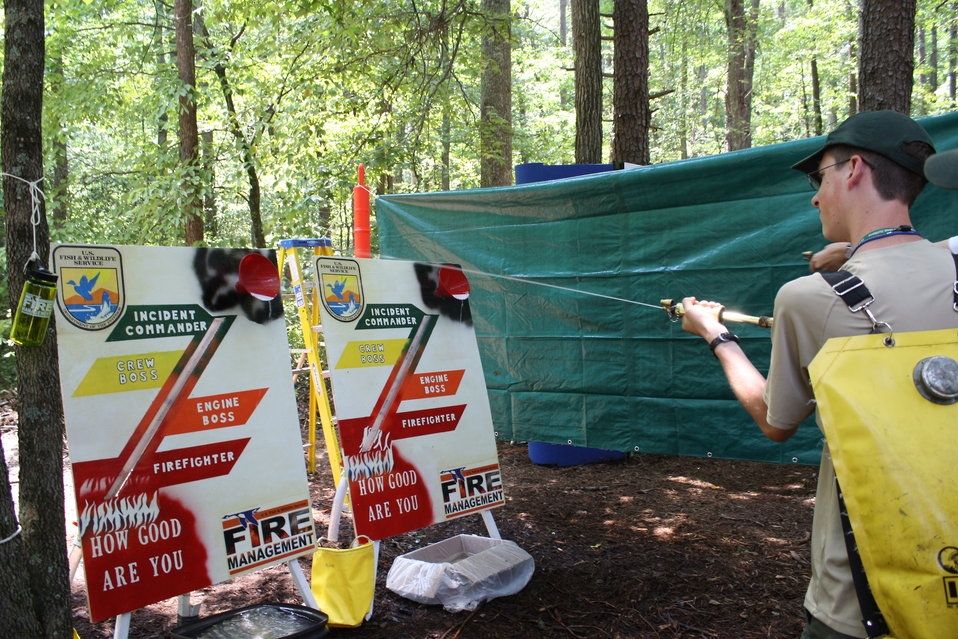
Boy Scout Jamboree 2010